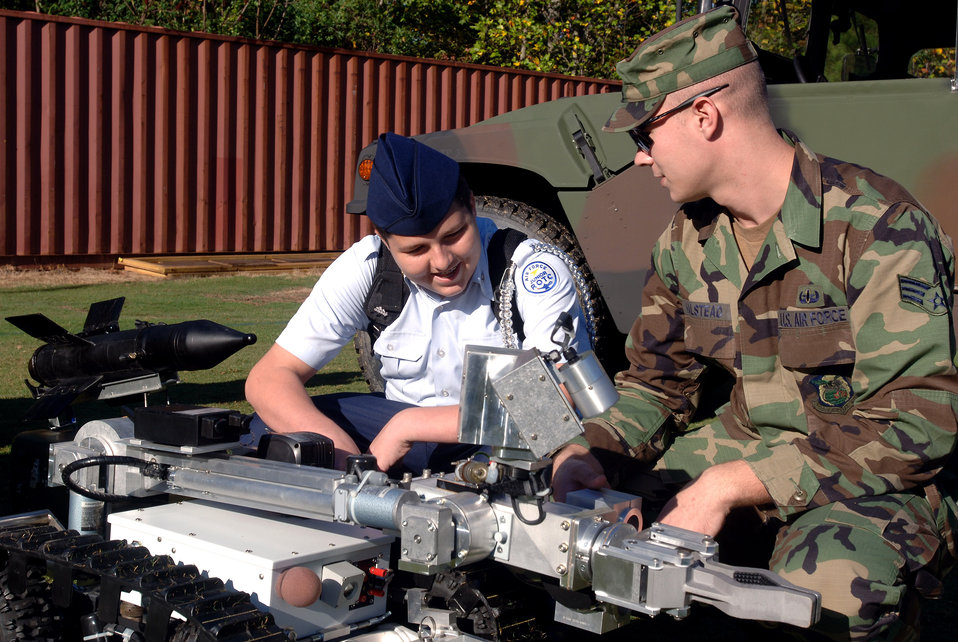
Airmen visit schools as part of Air Force Week Atlanta

Senior Airman Matt Halstead an explosive ordinance device technician from the 94th Civil Engineering Squadron, Dobbins Air Reserve Base, Ga., demonstrates EOD equipment to Josh Shoemaker Oct. 10 during an Air Force Week Atlanta event at Etowah High School in Woodstock, Ga.